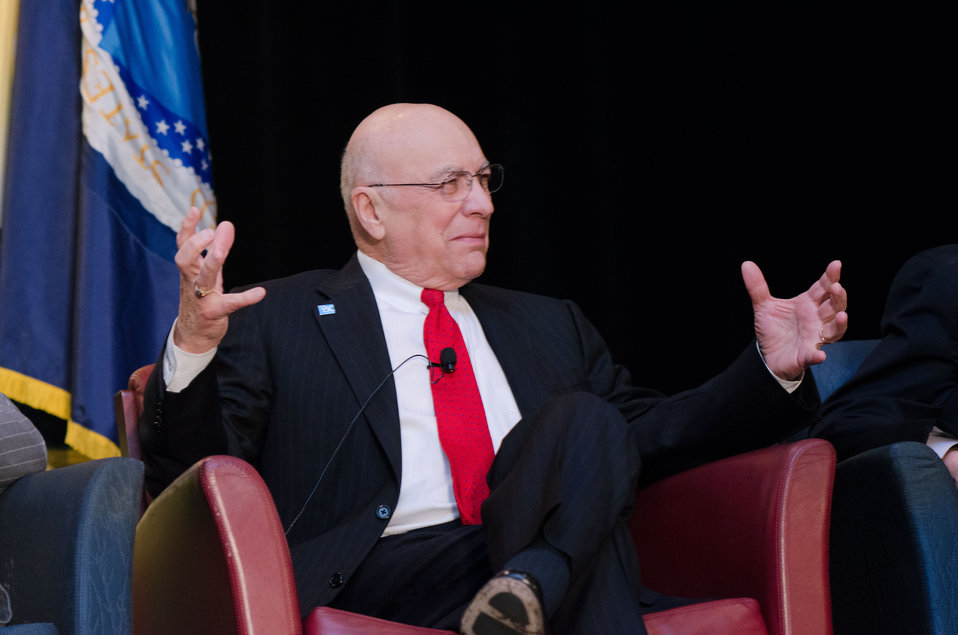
At the 2012 Agricultural Outlook Forum, “Moving Agriculture Forward” in Arlington, VA, on Thursday, February 23, 2012, 7 former Secretaries of Agriculture sat on the plenary panel “Visions of the Future” hosted by current Agriculture Secretary Tom Vilsack. Clayton Yeutter speaks out during the panel discussions.